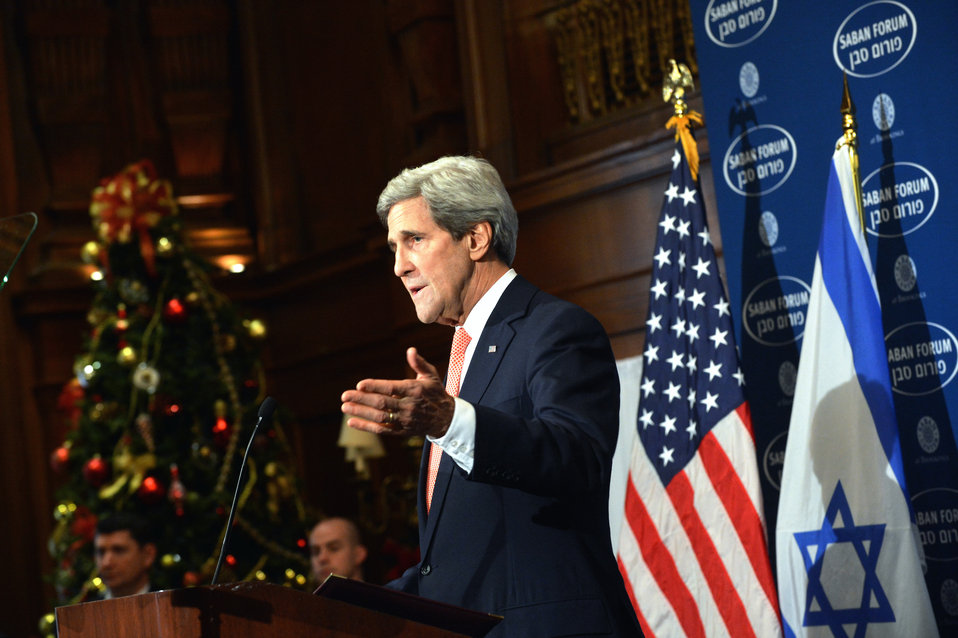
Secretary Kerry Delivers Remarks at the Saban Forum

U.S. Secretary of State John Kerry delivers remarks at the Brookings Institution's 10th annual Saban Forum, 'Power Shifts: U.S.-Israel Relations in a Dynamic Middle East,' in Washington, D.C., on December 7, 2013.